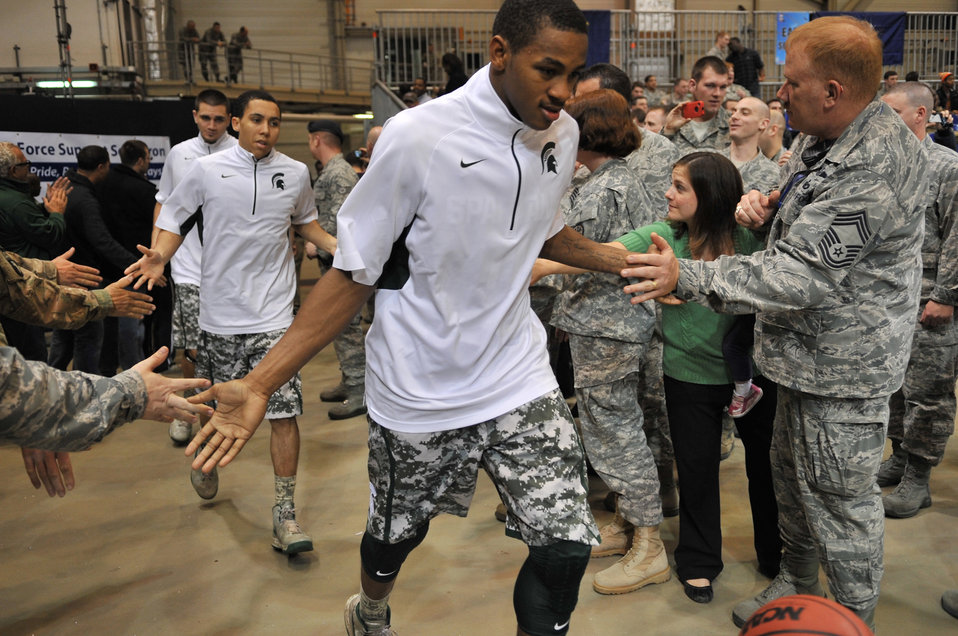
Armed Forces Classic

Michigan State Spartan players slap hands of service members after half time during the Armed Forces Classic basketball game between Michigan State Spartans and University of Connecticut Huskies at Ramstein Air Base, Germany, Nov. 10, 2012. The Huskies overcame the Spartans 66-62.